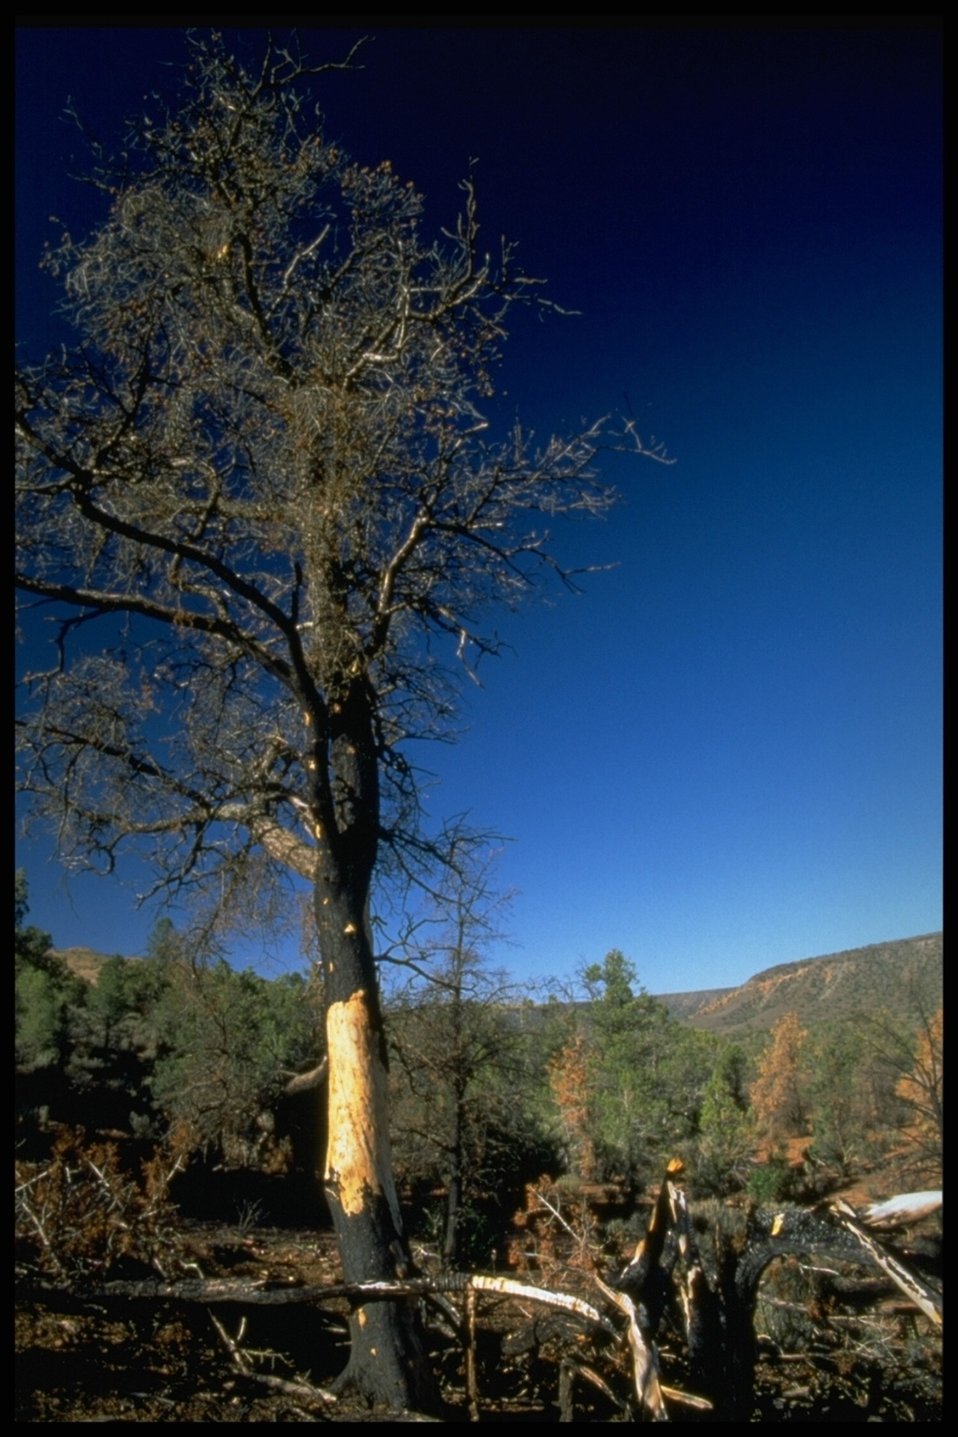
A large tree in the Parashant National Monument Area.